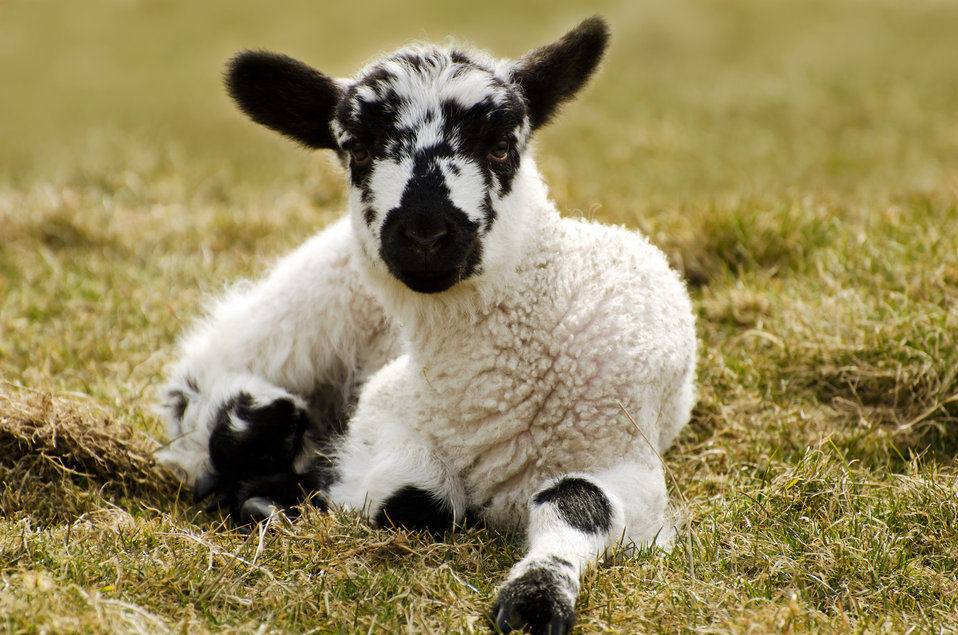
Lamb - animals.